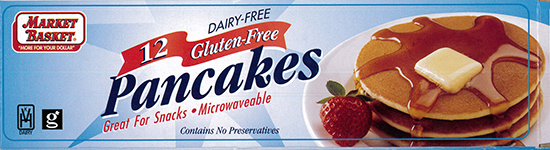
RECALLED – Product Description

May 19, 2014 – Product Recall – Middle East Bakery, Inc. Issues Allergy Alert on Undeclared Milk in Market Basket Dairy-free, Gluten-free Pancakes.